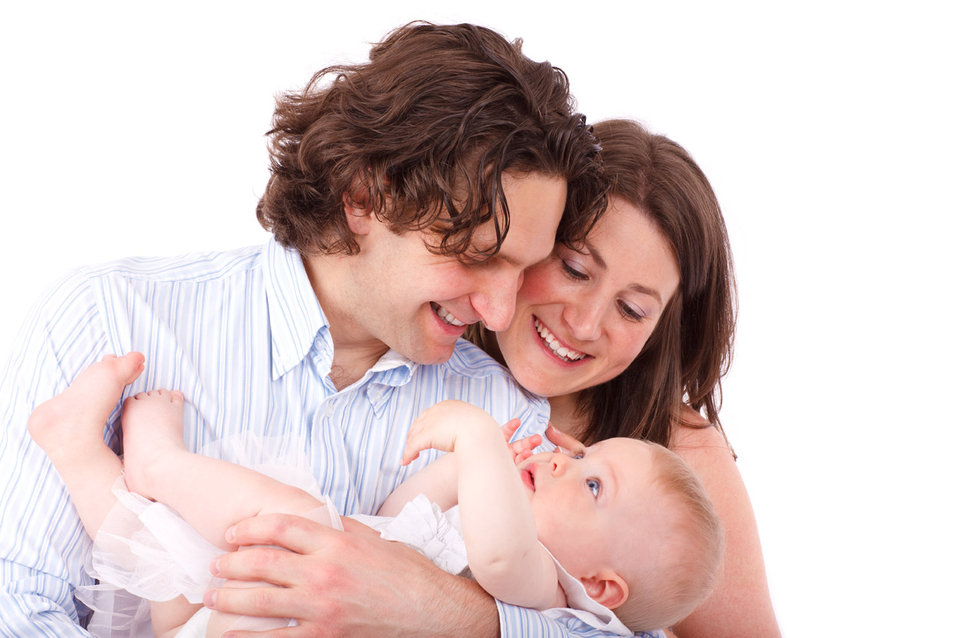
Parents holding baby

Proud parents are holding their baby girl isolated on white background.